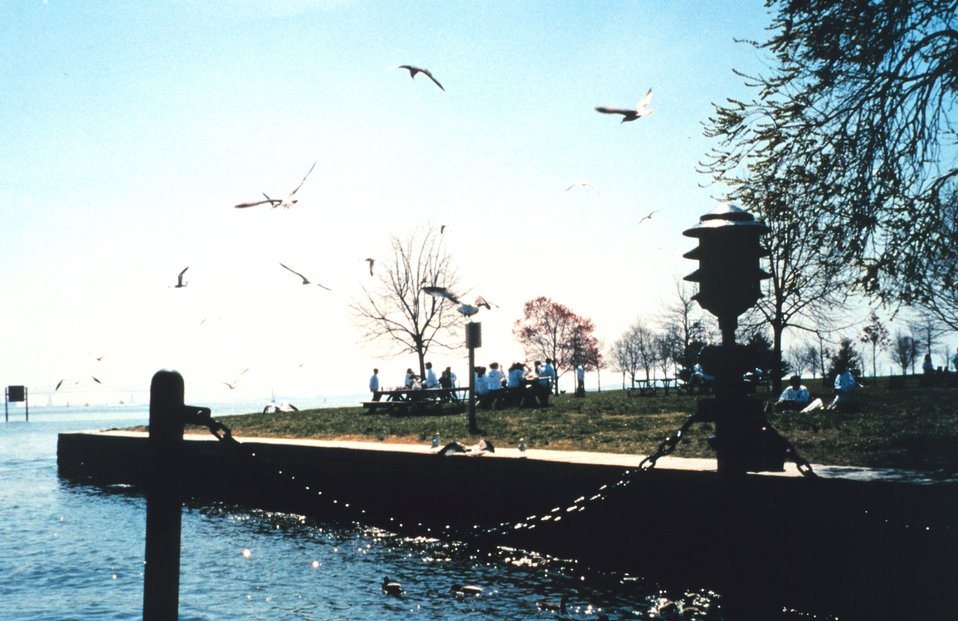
Volunteers helping clean up the wetlands and waterfront area around Fort McHenry in Baltimore Harbor. Stopping for lunch at the Fort McHenry picnic area.